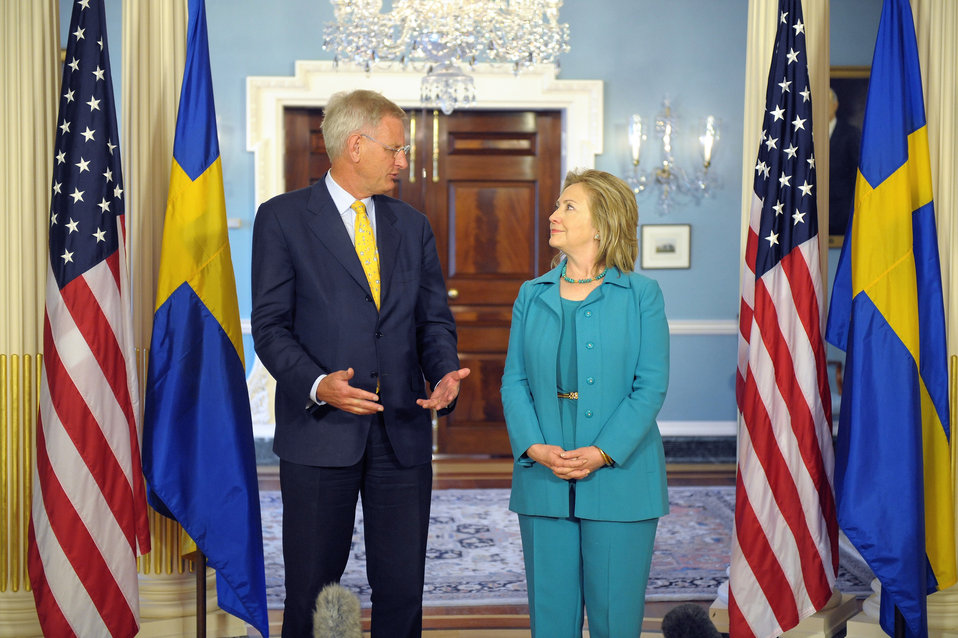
Secretary Clinton Holds a Bilateral Meeting With Swedish Foreign Minister Bildt

U.S. Secretary of State Hillary Rodham Clinton holds a bilateral meeting with Swedish Foreign Minister Carl Bildt, at the U.S. Department of State in Washington, D.C., on April 29, 2011.